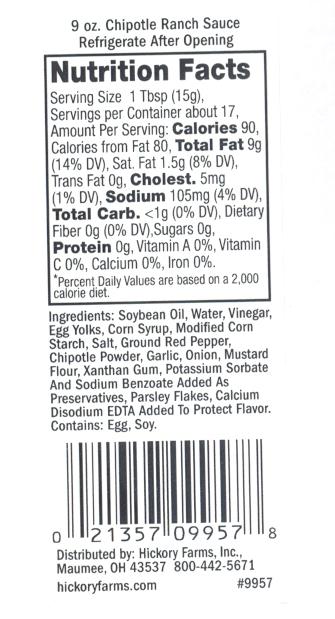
RECALLED – Chipotle Ranch Sauce

April 19, 2014 – Product Recall – Hickory Farms Issues Allergy Alert on Chipotle Ranch Sauce Due to Undeclared Milk.